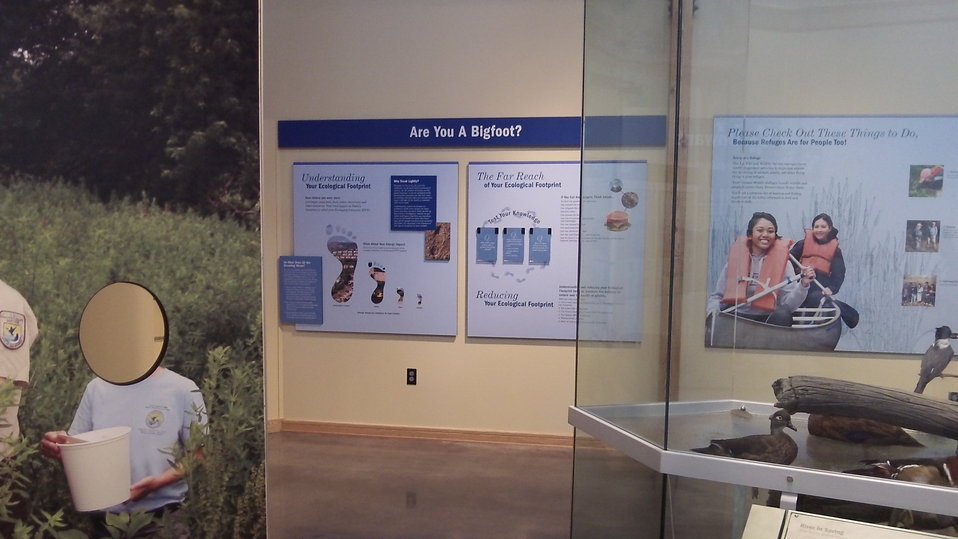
Assabet River National Wildlife Refuge

Inside the Visitor's Center at Assabet River National Wildlife Refuge, Sudbury, MA.